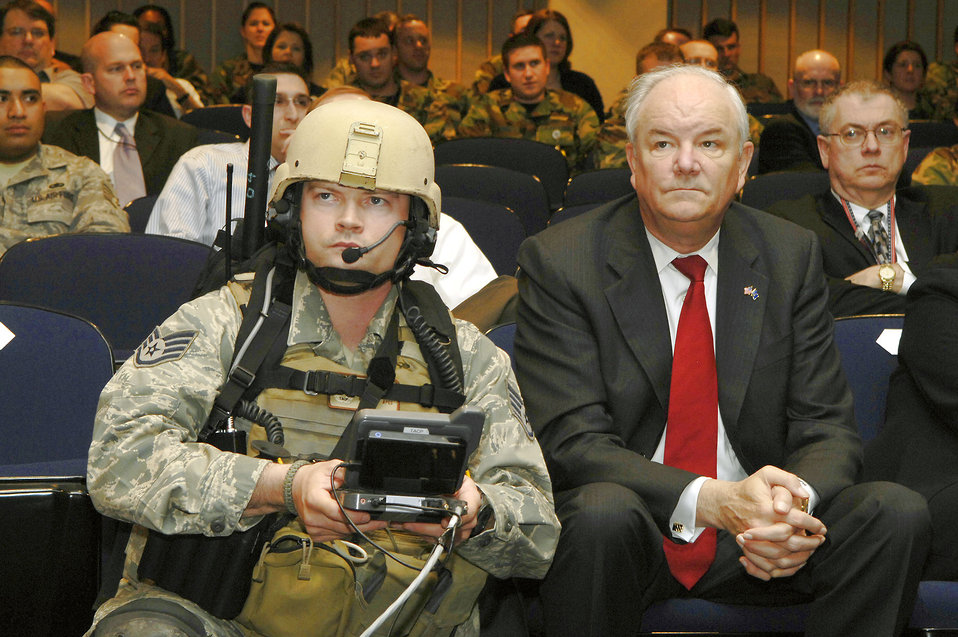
Streamlining the process

Staff Sgt. Justin Cremer, a tactical air control party Airman, demonstrates a close air support mission for Air Force Secretary Michael W. Wynne April 3 at Hanscom Air Force Base, Mass. A machine-to-machine interface automatically transfers coordinates into the cockpit, streamlining the kill chain.